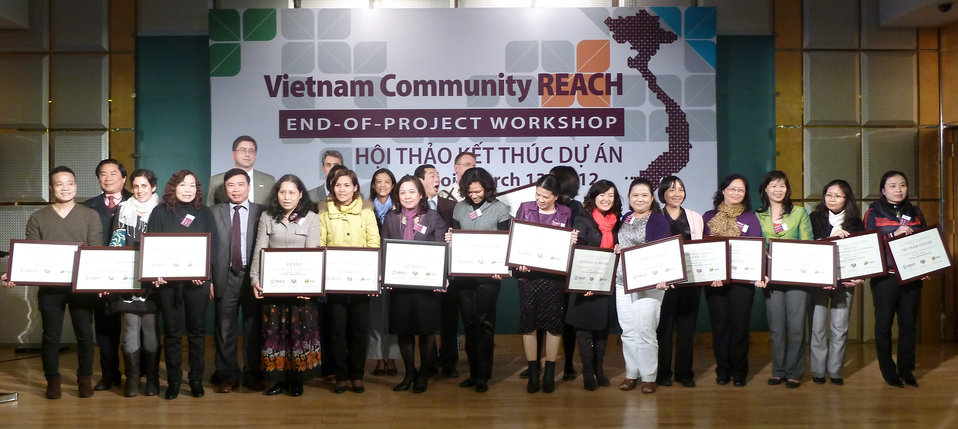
USAID, PEPFAR, and Pact award certificates to local and international partners for their work in addressing HIV in Vietnam

Community REACH project close-out with USAID and implementing partner, Pact